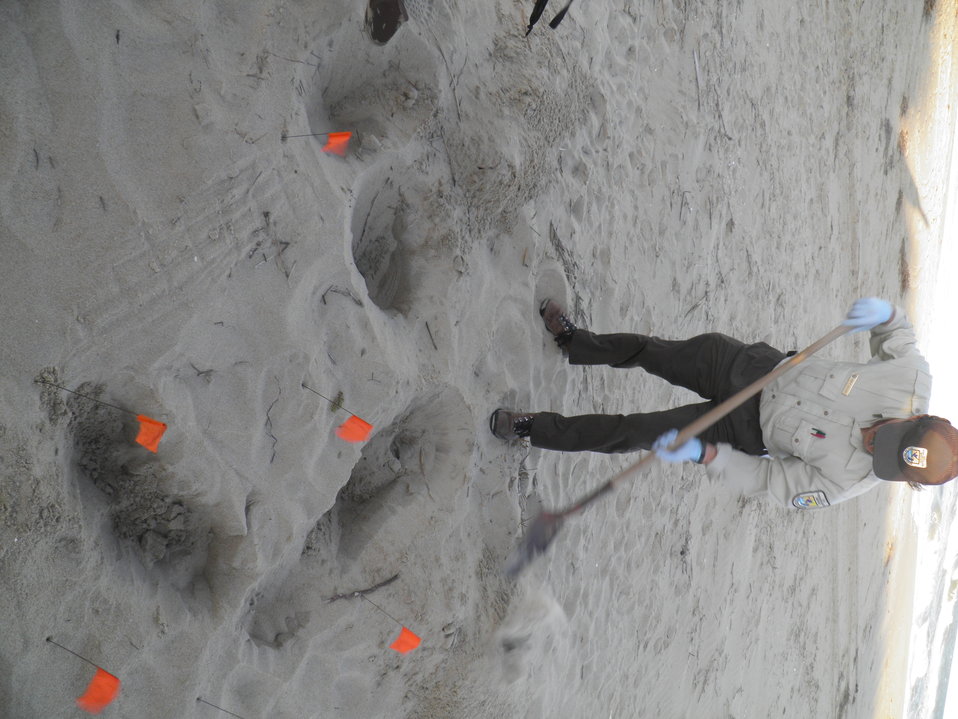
Digging the trench.

Credit: USFWS
Crawl 3, Nest 3